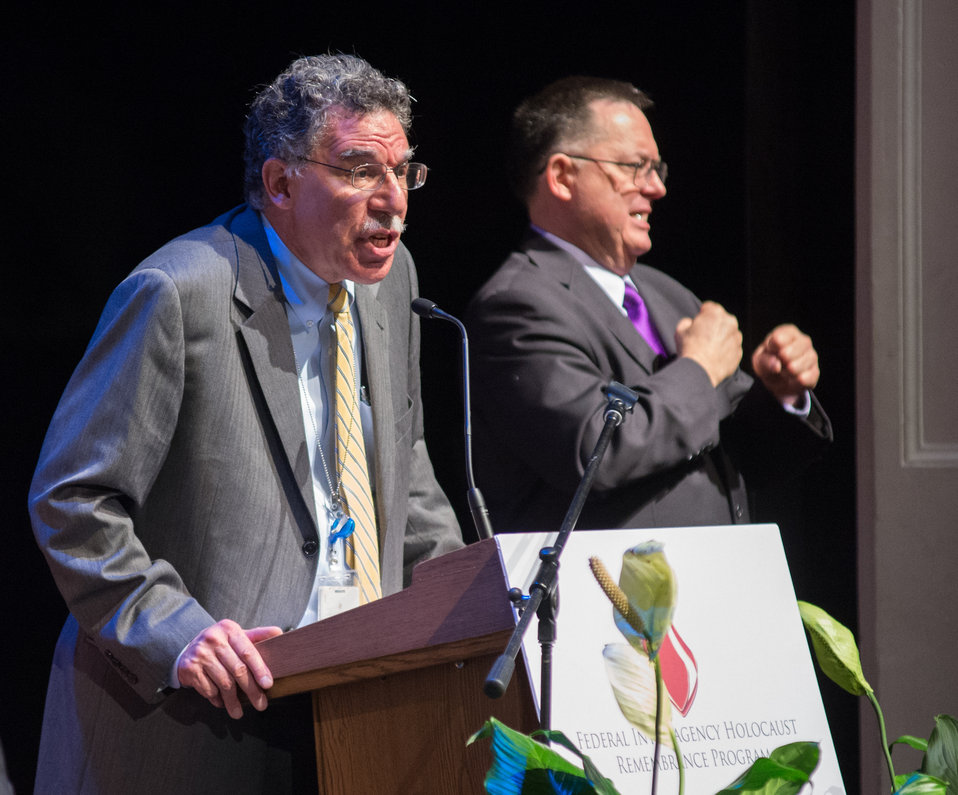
United States Holocaust Memorial Museum Division of the Senior Historian Director Peter Black, Ph.D., moderates the 2013 Federal Inter-Agency Holocaust Remembrance Day, at the Lincoln Theater, on Wednesday, April 17, 2013, in Washington, D.C. Since the 1979 President’s Commission on the Holocaust, an annual proclamation signed by the President of the United States recognizes the importance of remembering the atrocities of the Holocaust that should never be forgotten or be ignored.